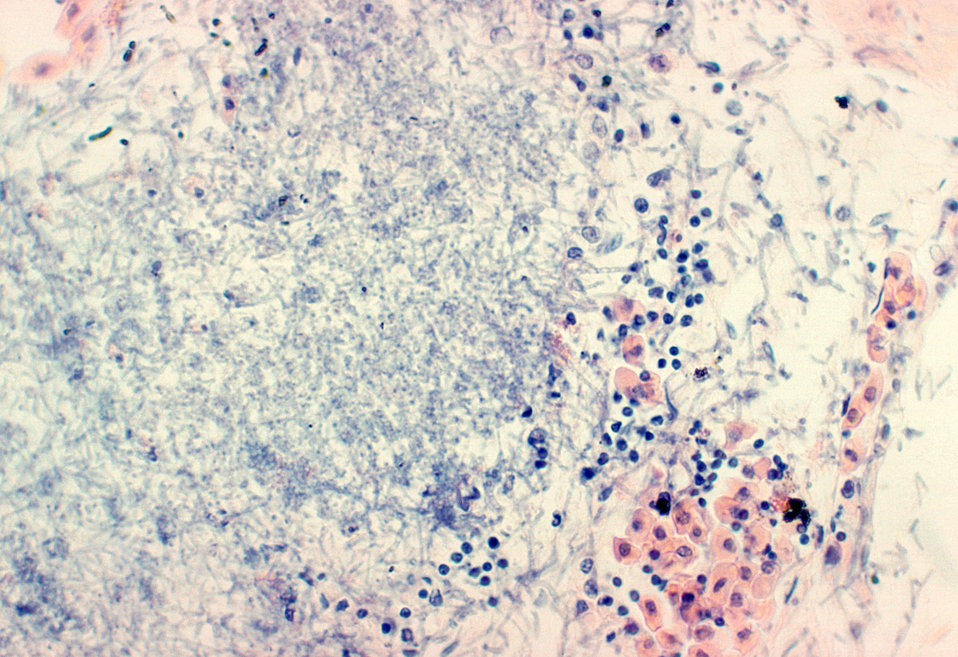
Histopathology of the lung of a box turtle experimentally infected with Beauveria bassiana fungi.